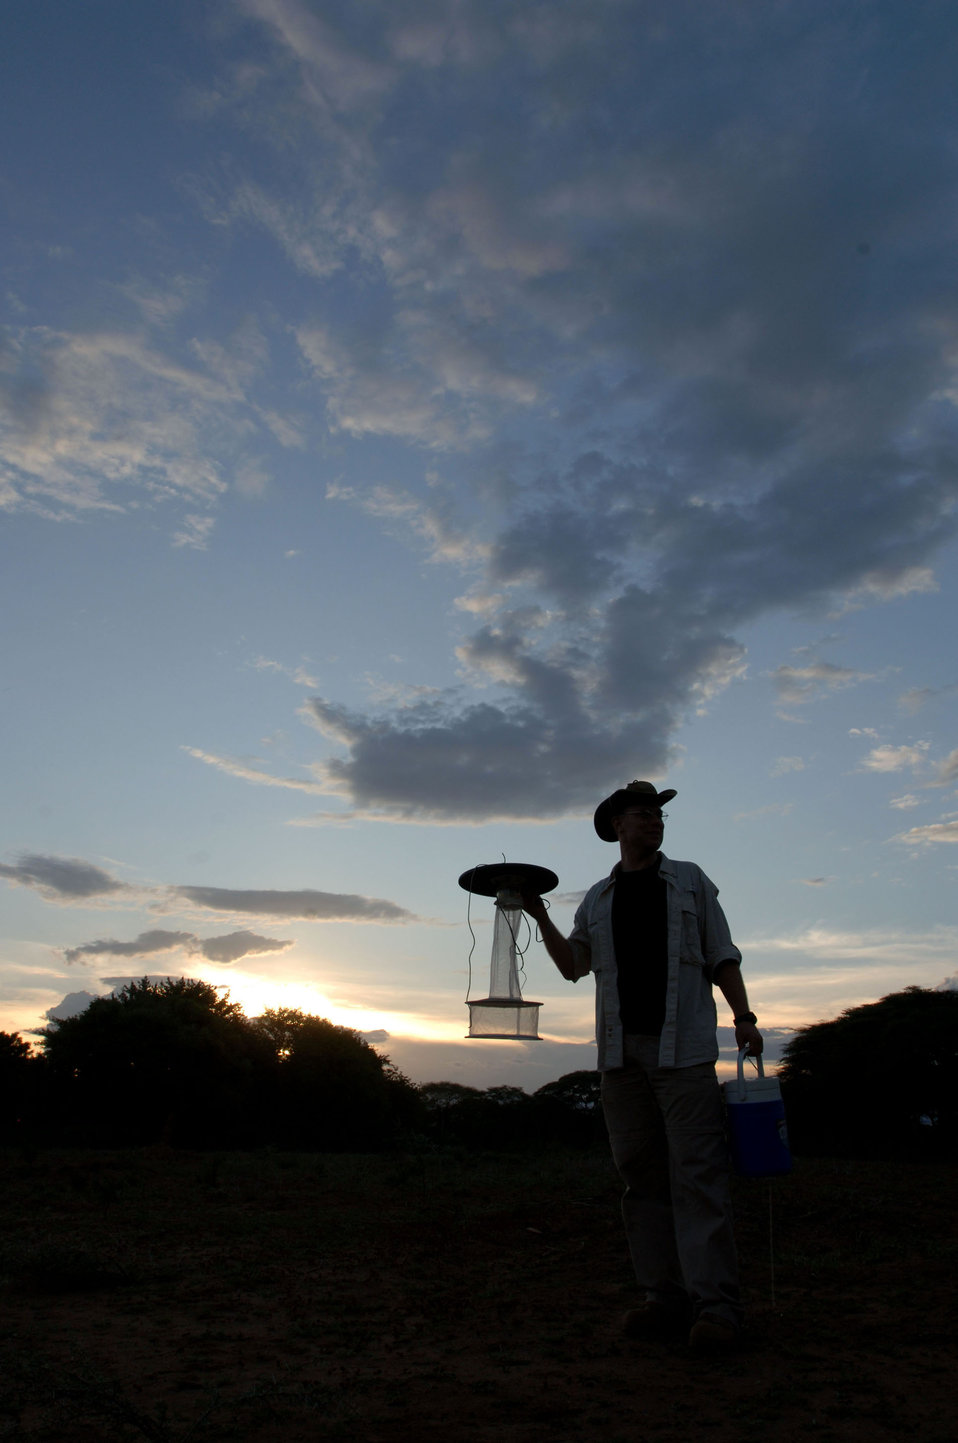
Military team works to prevent, treat deadly disease

Maj. Keith Blount takes traps out into a field to capture sand flies, which carry leishmaniasis, during the vector-borne and infectious disease field diagnostic development initiative Jan. 8, 2010, in Marigat, Kenya. Major Blount is an entomologist.